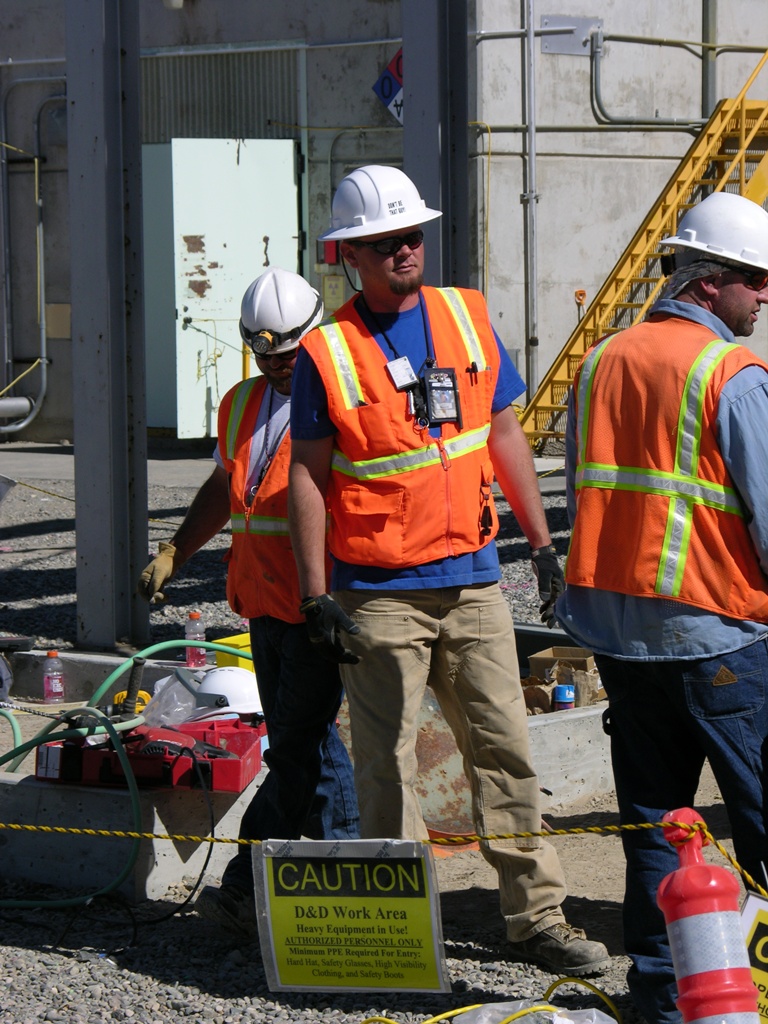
Idaho: Greater Opportunities through Recovery Act Funding

On July 29, 2009, Maynard was hired as a Hazard Reduction Technician laborer supporting the electricians on College of Idaho CWI’s Decontaminating and Decommissioning (D&D) team.